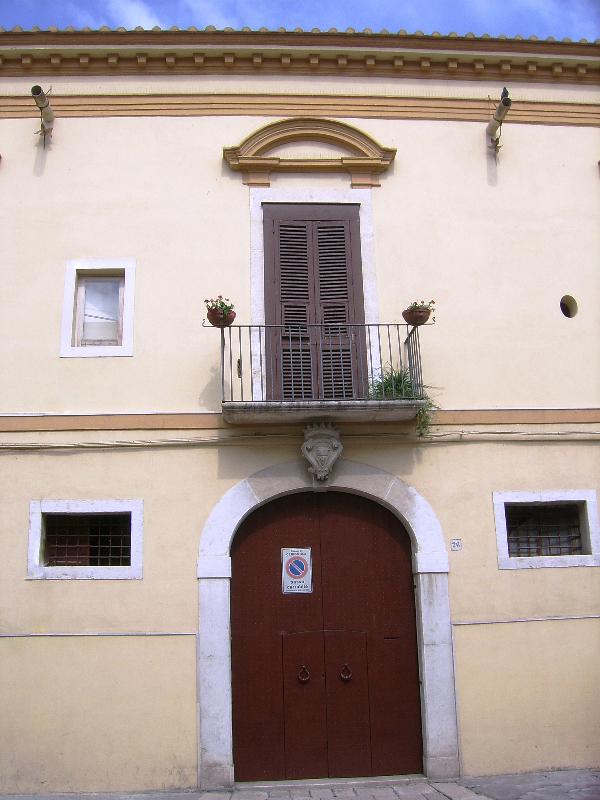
Italiano: Foto di Palazzo Zezza a Cerignola